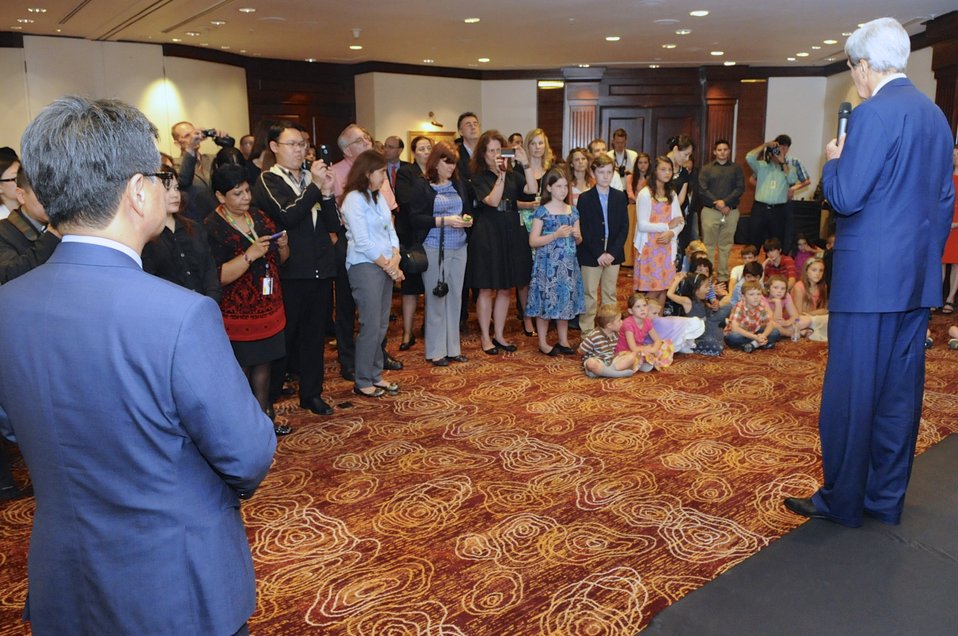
Secretary Kerry Thanks Embassy Kuala Lumpur Staff

U.S. Secretary of State John Kerry, flanked by U.S. Ambassador to Malaysia Joseph Yun, addresses staffers and family members from Embassy Kuala Lumpur during a visit to the capital city on October 10, 2013.